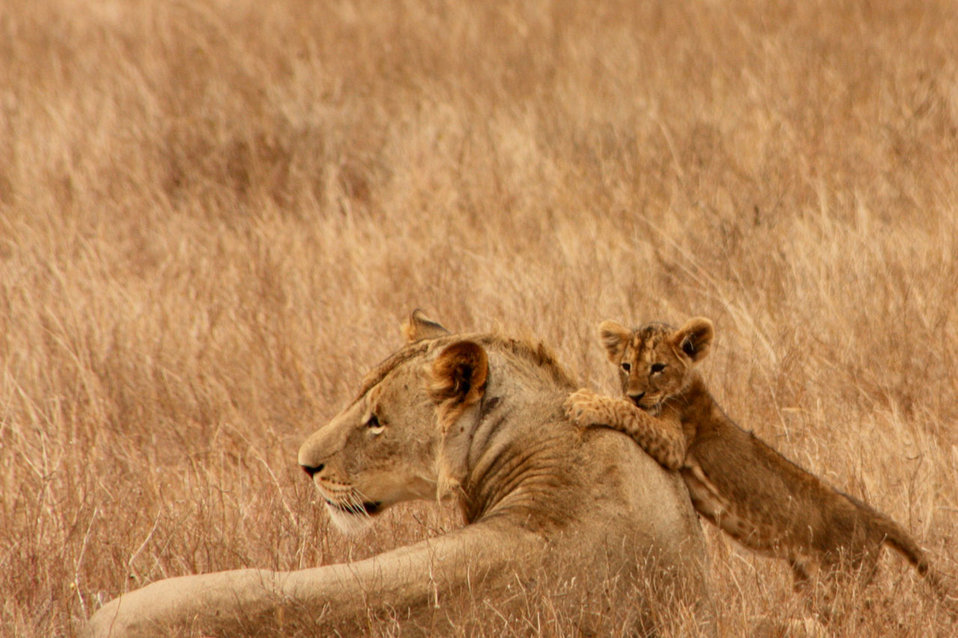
Lions

Lion with the baby.